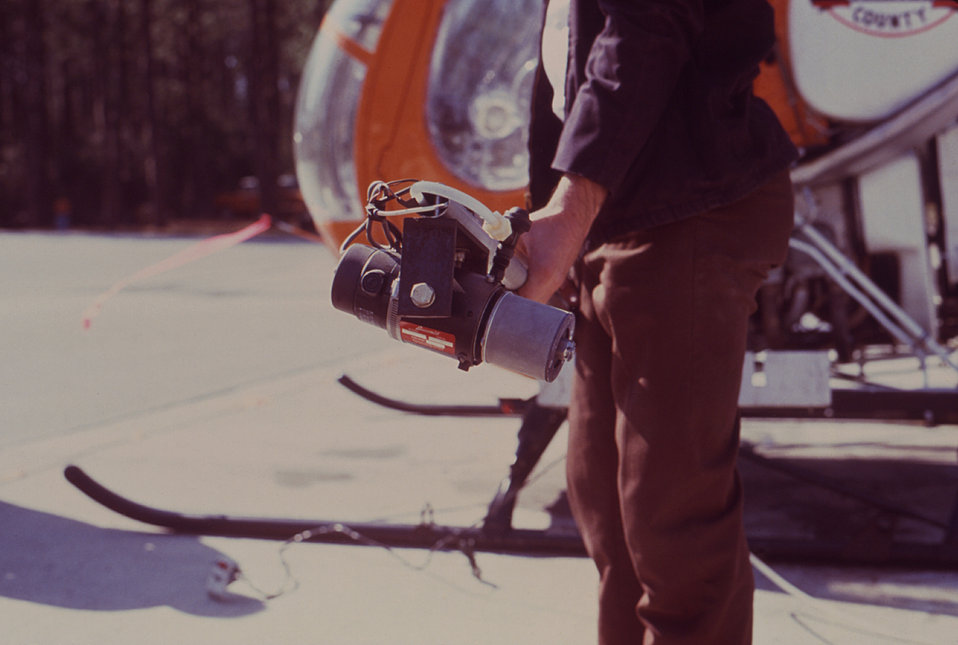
This photograph depicts the Beecomist System spray nozzle that had been attached to a Hughes helicopter spray boom, and through which an ultra-low volume (ULV) insecticidal fog was dispersed.